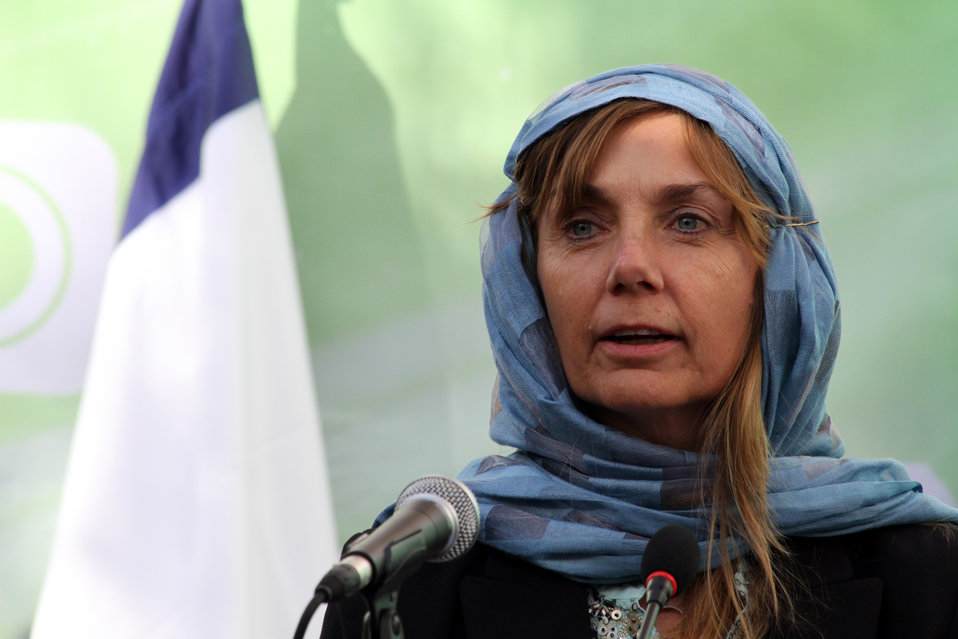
Afghan Youth Festival

Internews - USAID